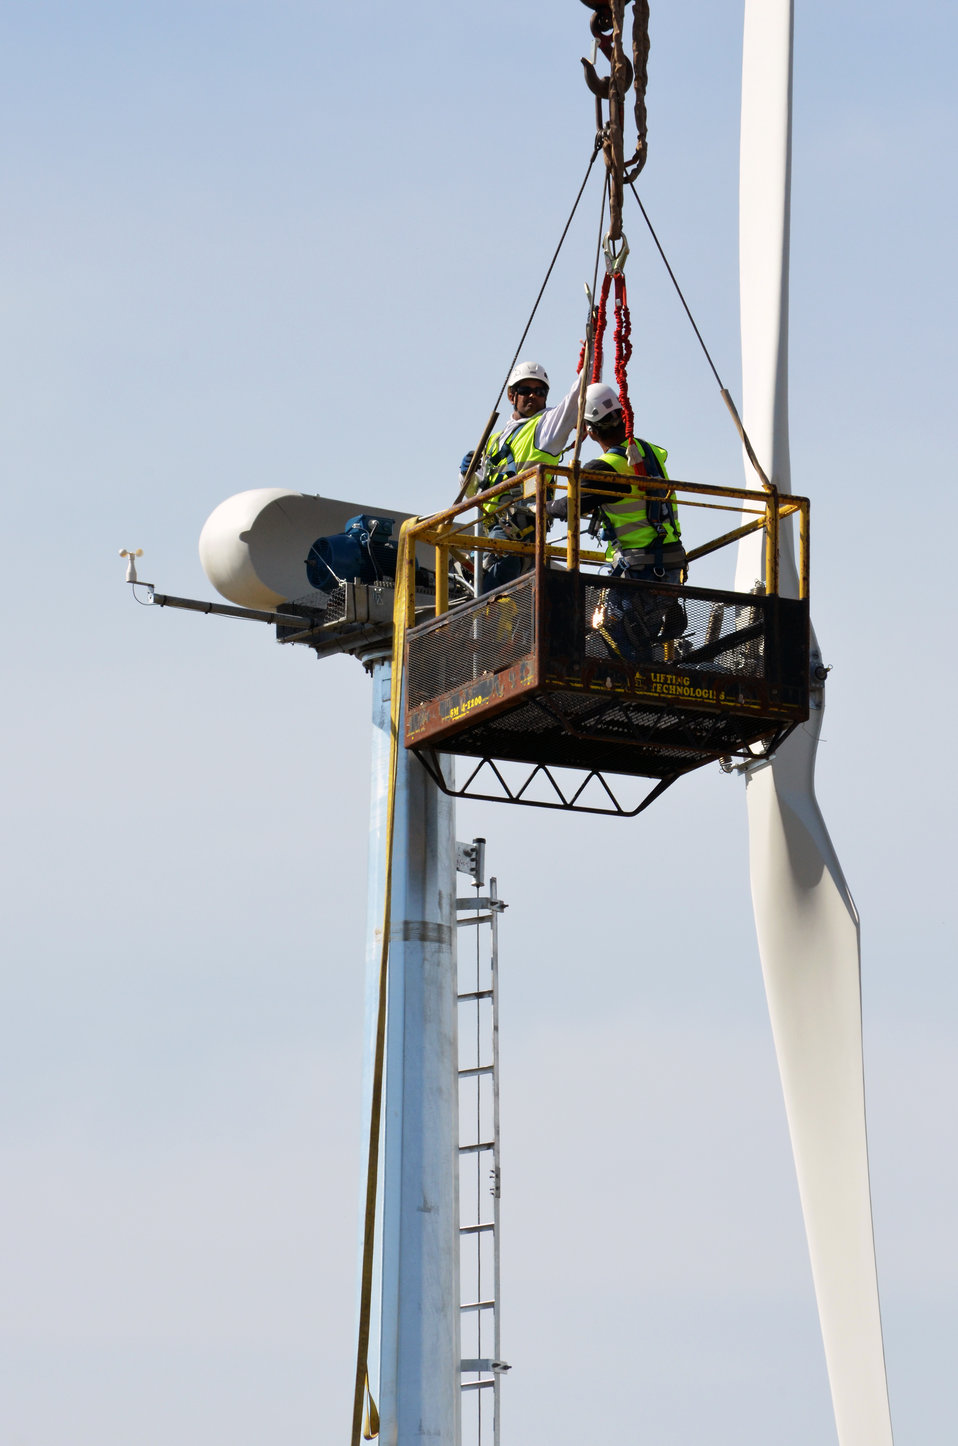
Checking under the hood

Contractors are hoisted aloft to check the power head atop the 120-foot mast of the wind turbine during final assembly March 13, 2013, at Black Butte Lake, a U.S. Army Corps of Engineers Sacramento District park near Orland, Calif. Expected to go online within 30 days, the turbine can generate 11 kilowatts of energy and will help supply the needs of campers in the park.